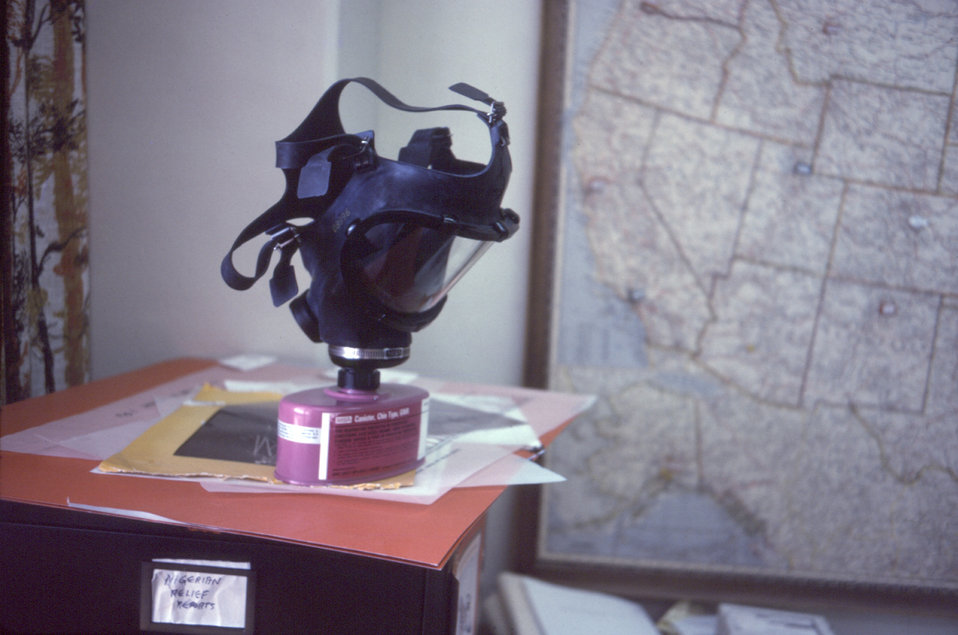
This photograph showed a protective facial filtration mask, equipped with a HEPA filter, which is similar to those used in the Zaire, and Sudan Ebola outbreaks of 1976.